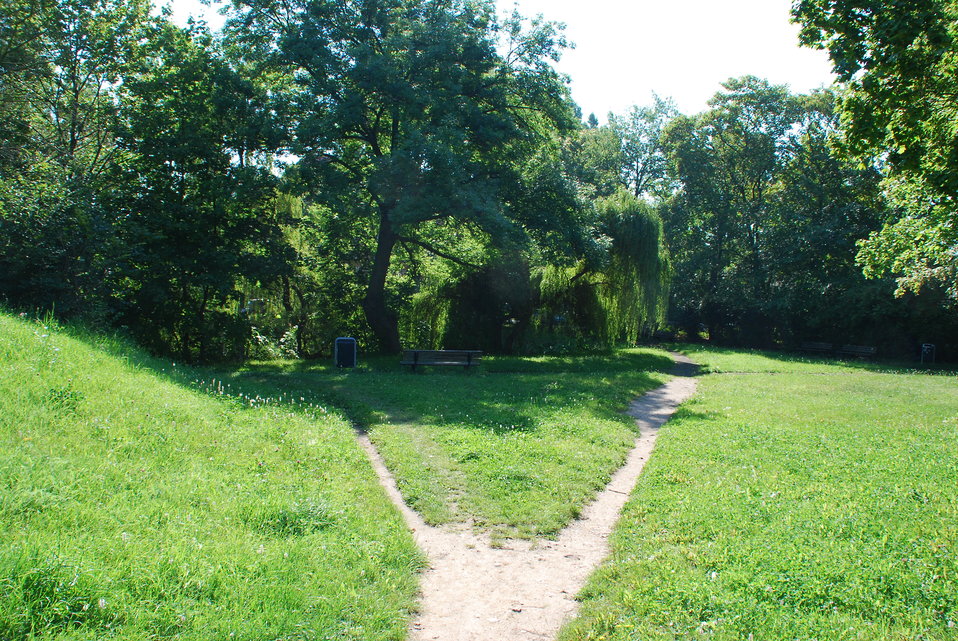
Deutsch: Theaterteich in Frankfurt (Oder), am ehemaligen Kleist-Theater, Friedrich-Ebert-Straße